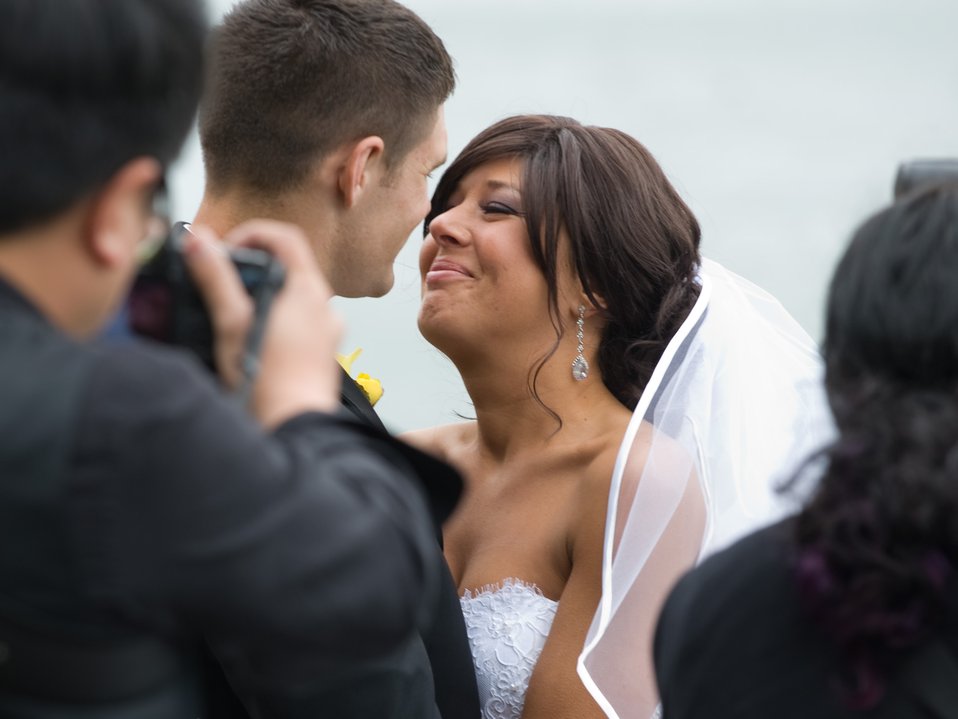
San Francisco Dream Wedding

Vanessa Muza Teskey and Capt. Mike Hawkins have some of their wedding photos taken at a San Francisco waterfront May 14, 2010. The wedding couple won the San Francisco Dream Wedding Giveaway with viewer votes. Mrs. Hawkins has been diagnosed with stage IV Hodgkin's lymphoma. Vendors donated $100,000 of goods and services for their wedding day.